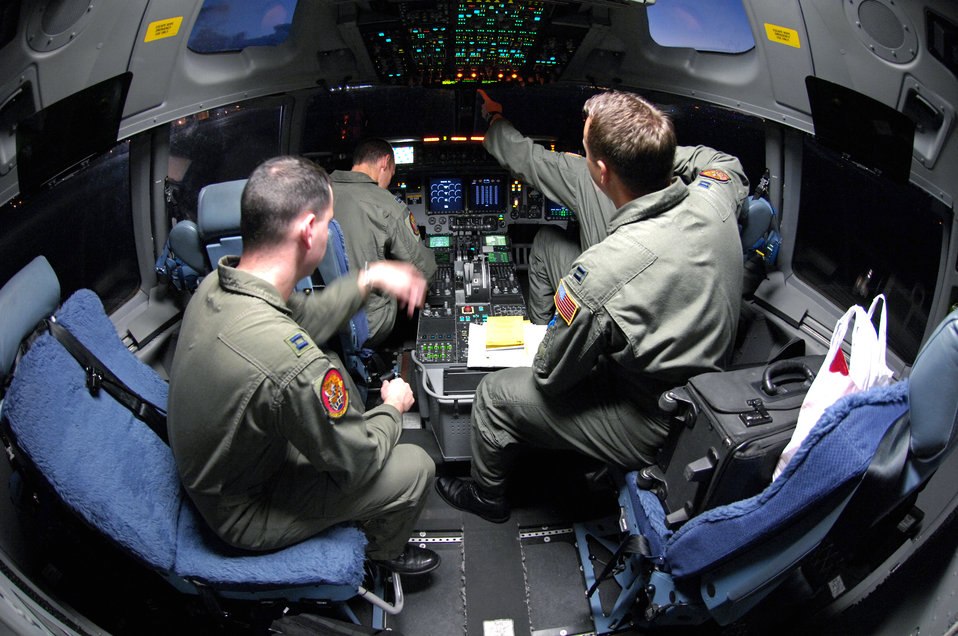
Global presence

Pilots from the 535th Airlift Squadron conduct preflight checks on their C-17 Globemaster III prior to taking off Jan. 19 on a local training mission from Hickam Air Force Base, Hawaii. The aircraft can perform tactical airlift and airdrop missions and can also transport litters and ambulatory patients during aeromedical evacuations when required.